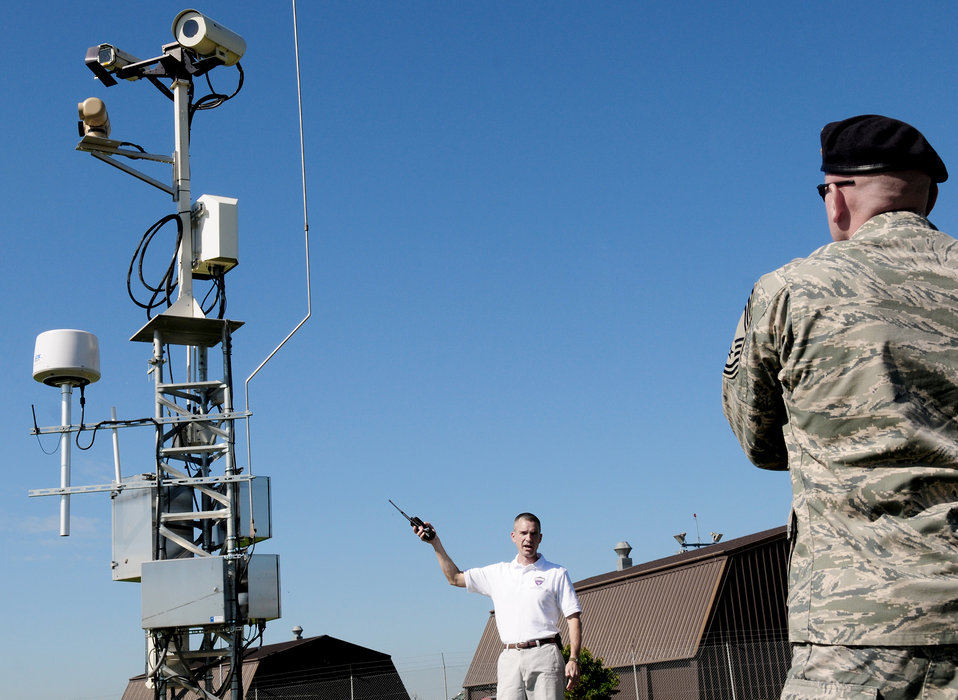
JFPASS

David Dykes provides tower information to Chief Master Sgt. Kevin Peters during a site tour of key components of the Joint Force Protection Advanced Secuirty System Aug. 20, 2010, at Spangdahlem Air Base, Germany. The system integrates advanced technology including Smart Car-sized robots, cameras, software and motion sensors with existing technology to increase force protection capabilities. Mr. Dykes is a JFPASS team member and Chief Peters is the U.S. Air Forces in Europe Security Forces Manager.